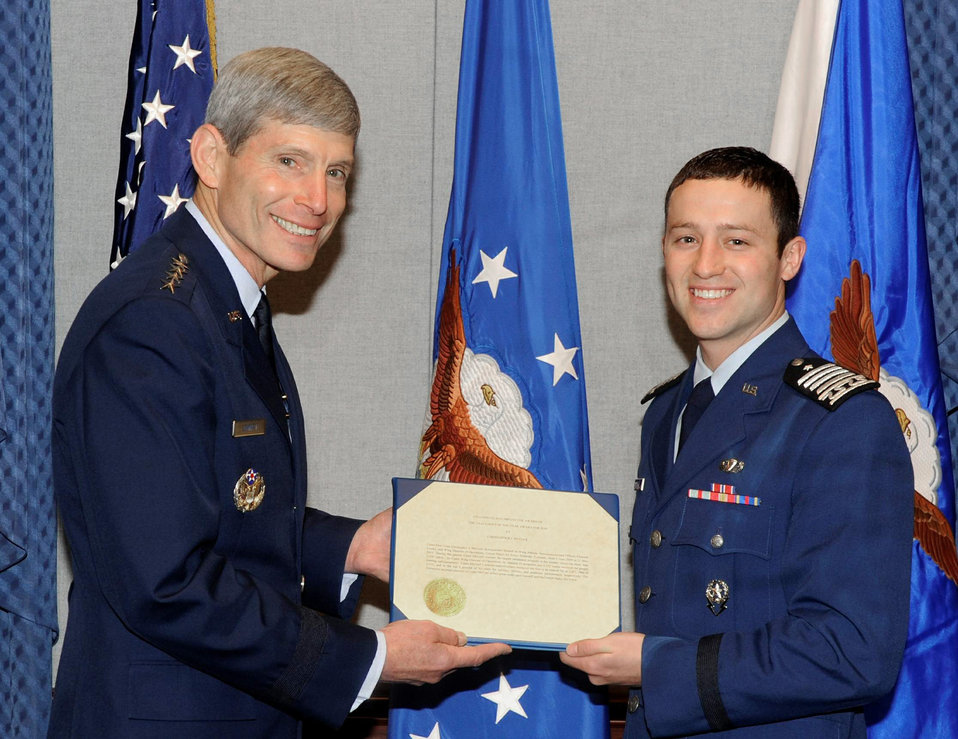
2010 U.S. Air Force Cadet of the Year

Air Force Chief of Staff Gen. Norton Schwartz presents the 2010 U.S. Air Force Cadet of the Year award to Air Force Academy Cadet Christopher J. McCool during a ceremony May 12, 2011, at the Pentagon. Cadet McCool earned the honor for demonstrated excellence in military skill, academics and athletics in an Air Force commissioning program.